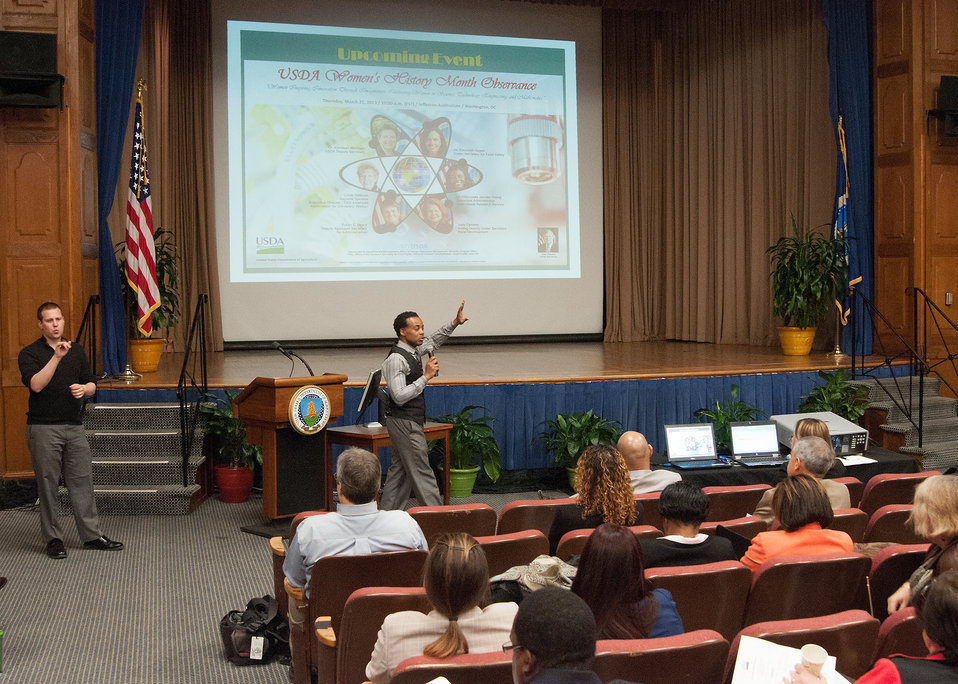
U.S. Office of Personnel Management, Training, Compliance and Strategy Office of Diversity Inclusion Deputy Director Bruce Stewart discusses Strategies to Increase Collaboration between Federal agencies at the First Annual All Hands Special Emphasis Program Managers (SEPM) Meeting at the U.S. Department of Agriculture Jefferson Auditorium in Washington, D.C. on Wednesday, Mar. 13, 2013.